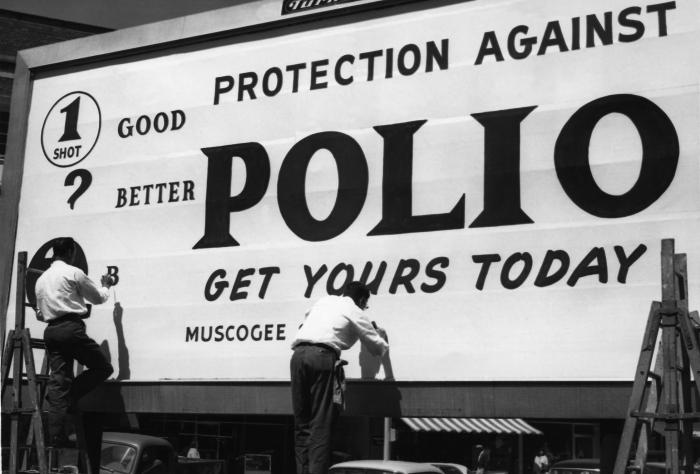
This historical image, which depicts workers creating a billboard in Columbus, Georgia, shows one of the communication modes, the billboard, used to promote public health awareness, in this case, polio vaccinations within a community. This campaign was produced by the former U.S. Department of Health, Education and Welfare's, Public Health Service, Bureau State Services, and what was the Communicable Disease Center, in cooperation with the Georgia Department of Public Health and the Muscogee Health Department. The billboard, as well as television, magazines, and pamphlets, are only some of the myriad of modalities implemented when information of this kind is disseminated throughout society, and across cultural barriers.